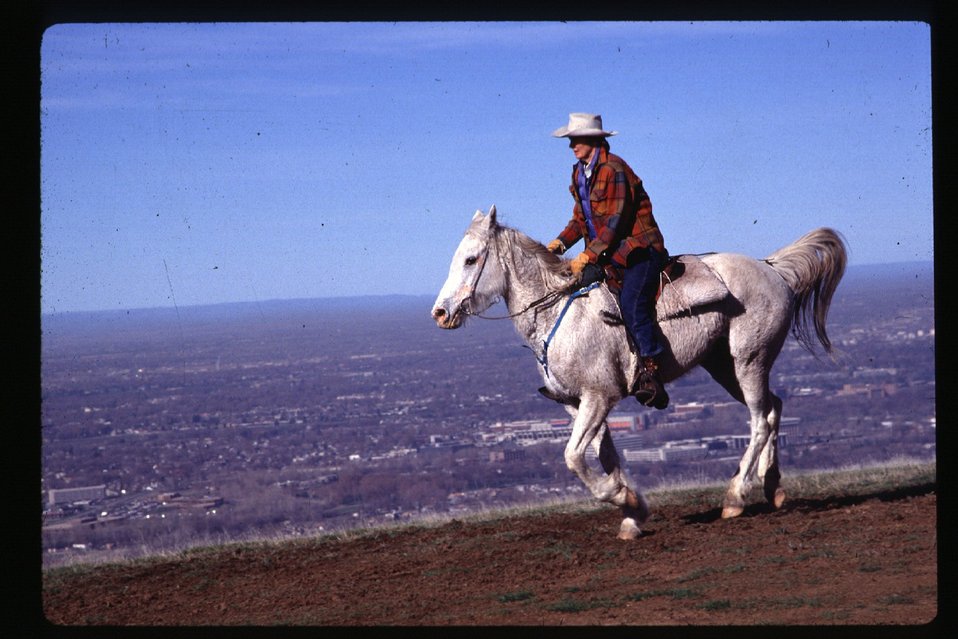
Recreation Boise Front Equestrian Four Rivers Field Office LSRD Lower Snake River District